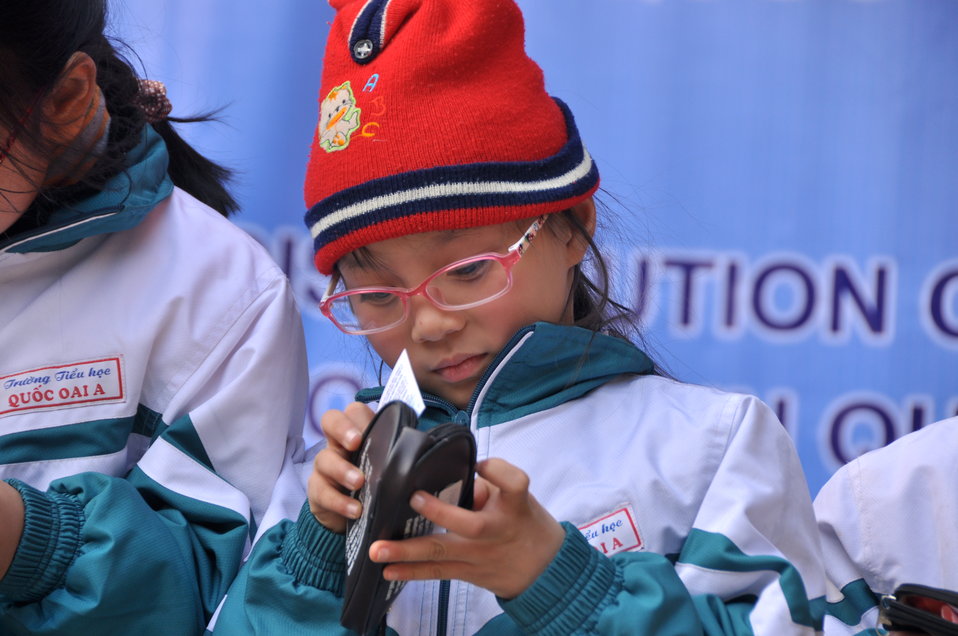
USAID supports distribution of eyeglasses to pupils and teachers in Quoc Oai, Hanoi.

Kieu Phu Junior Secondary School, Quoc Hoai, Hanoi, December 23, 2013.